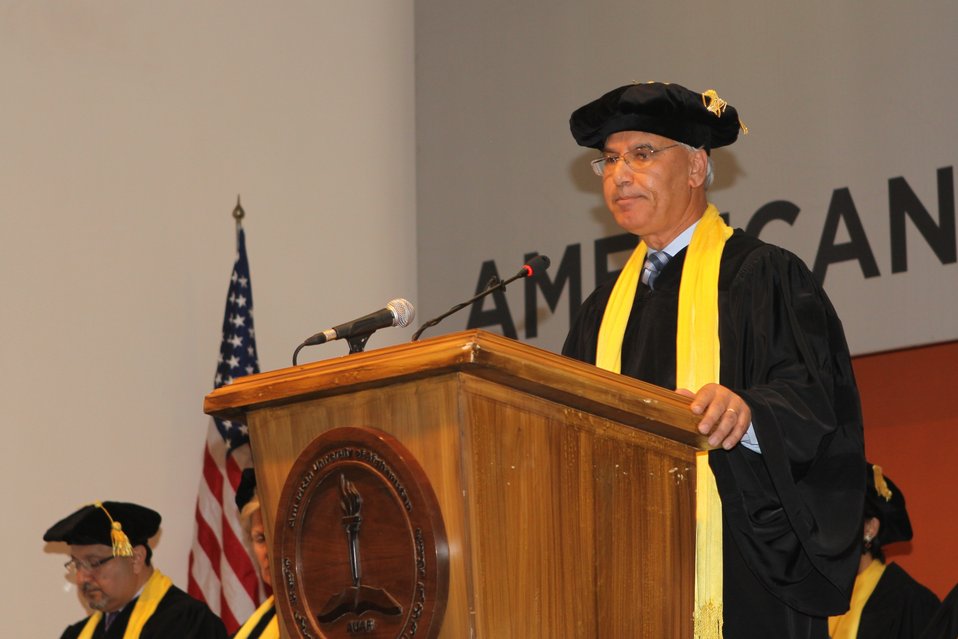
100526 AUAF Graduation 153